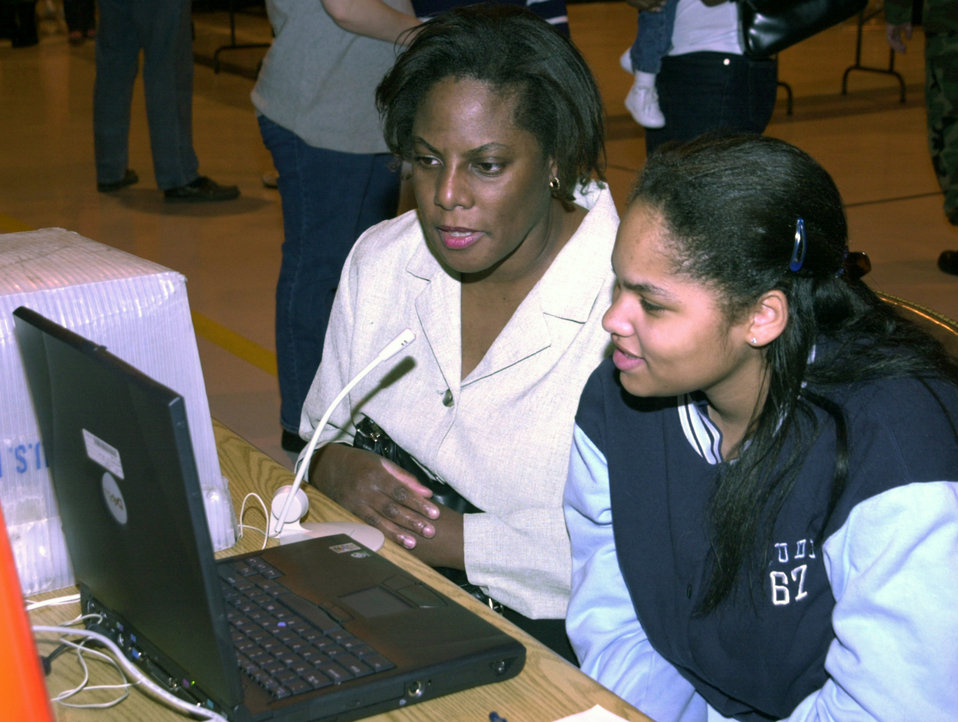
Hi dad!

ANDREWS AIR FORCE BASE, Md. -- Deborah Matos-Lowe and her daughter, Mercedes Matos, age 13, send a video e-mail to Master Sgt. Russell Lowe, 113th Logistics Squadron, D.C. Air National Guard. Lowe and other members of the squadron have been deployed for nearly two months. Families of the D.C. ANG gathered April 12 at Andrews Air Force Base, Md., for a pot-luck dinner, children’s games and a chance to help relieve some of the stress associated with the deployment of a loved one.